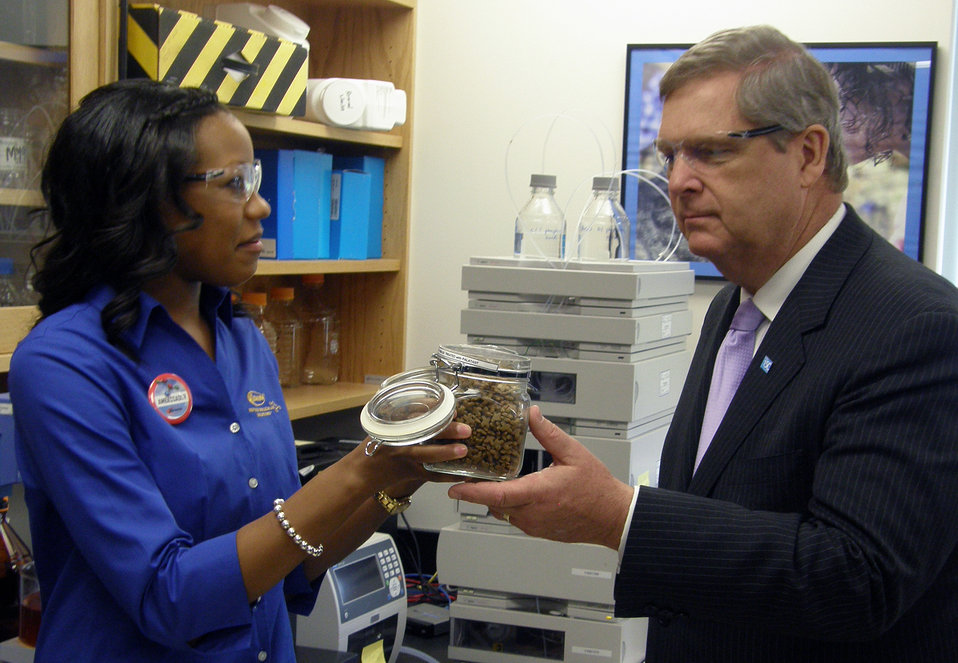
Agriculture Secretary Tom Vilsack toured Kemin Industries in Des Moines, IA on Friday, April 20, 2012. A Kemin Industries employee offered a sample of one of the company’s products to Secretary Vilsack. Kemin Industries is an innovative bioscience company that is using plant-based materials to manufacture ingredients used in dietary supplements and in personal care products.